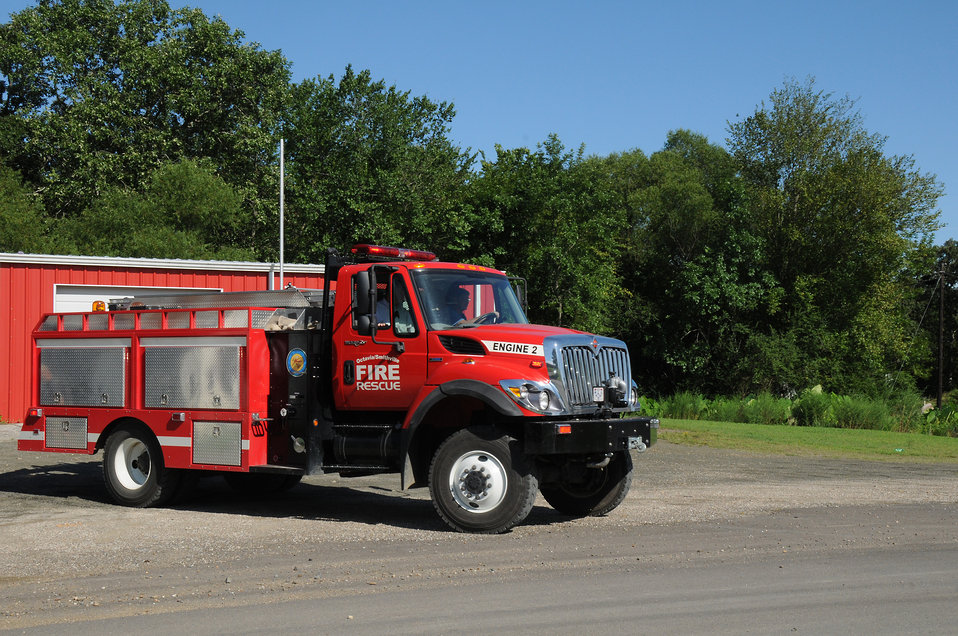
The U.S. Department of Agriculture (USDA) Rural Development (RD) Housing and Community Facilities Programs provided funding to the Octavia / Smithville, Oklahoma fire department through the American Recovery and Reinvestment Act (ARRA) on August 11. 2009.